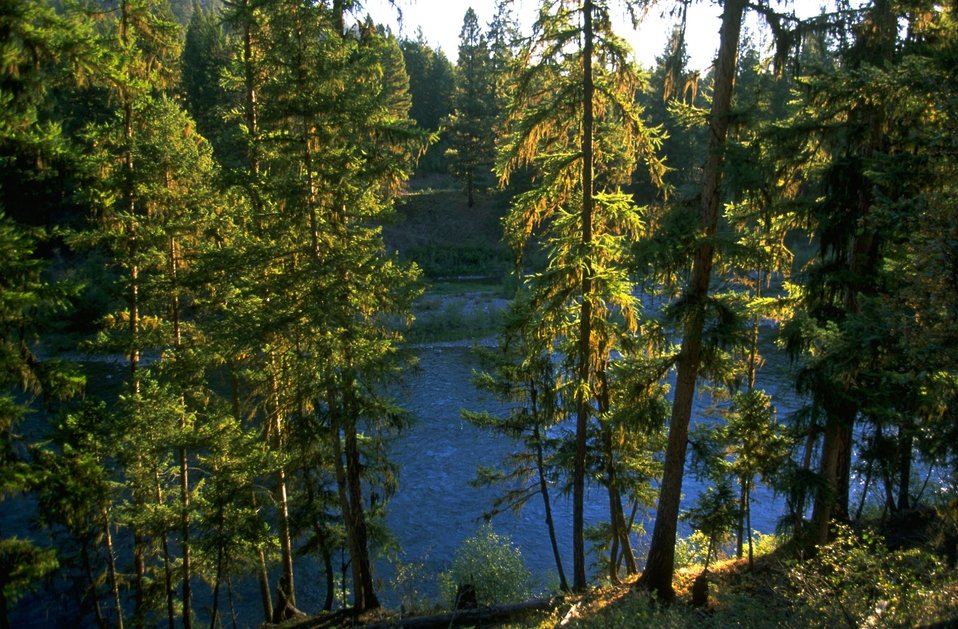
Forest land along the Blackfoot River